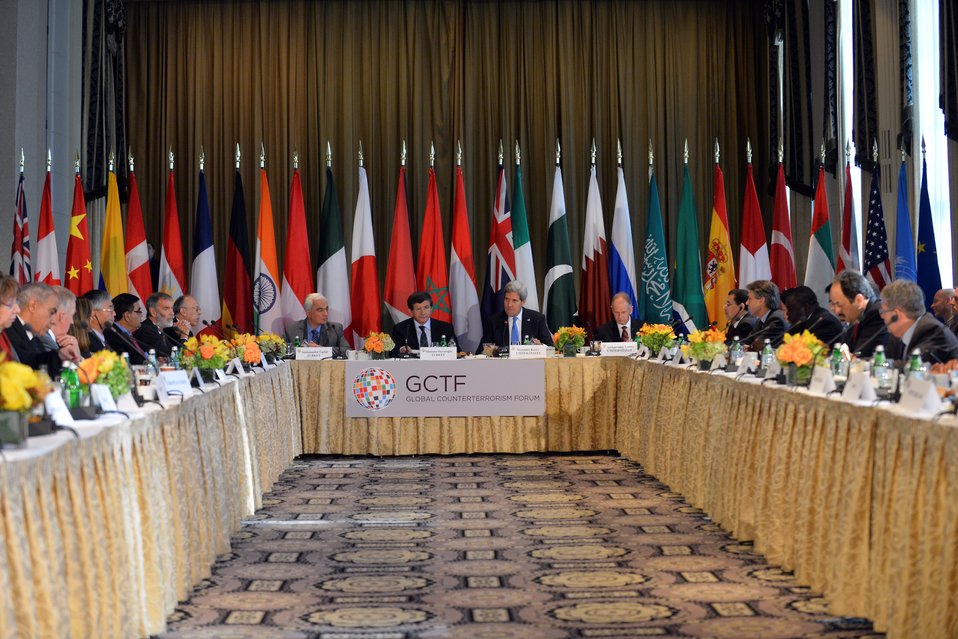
Secretary Kerry Participates in the Global Counter Terrorism Forum Ministerial

U.S. Secretary of State John Kerry participates in the Global Counter Terrorism Forum Ministerial in New York City on September 27, 2013.